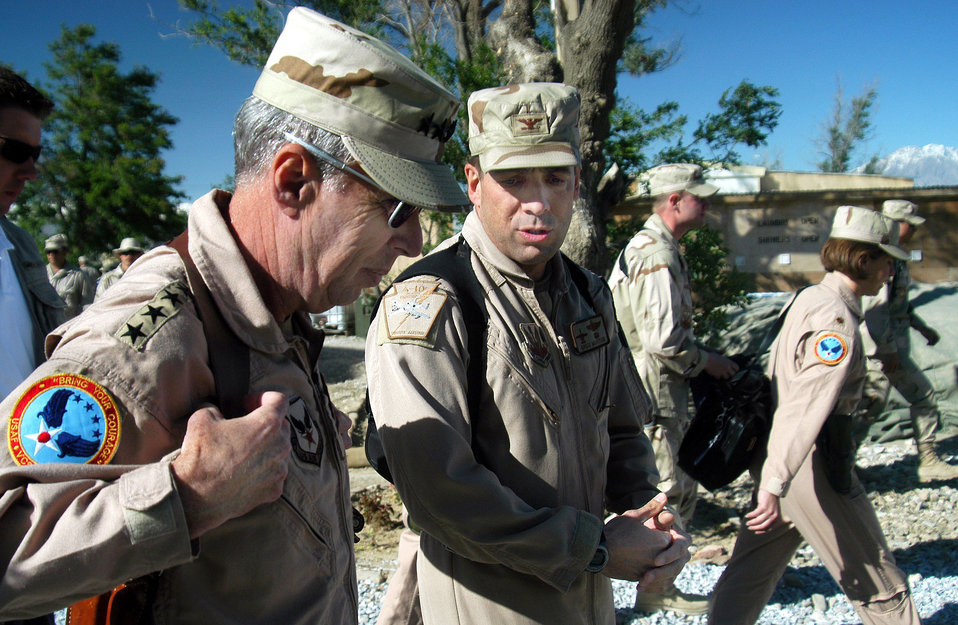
Bagram visit

OPERATION ENDURING FREEDOM (AFPN) -- Col. Greg Marston talks with Gen. Robert H. Foglesong, Air Force vice chief of staff, about quality of life improvements in Air Force Village at Bagram Air Base, Afghanistan on May 4. Foglesong toured the compound, received mission briefings and talked with airmen here about the current state of the expeditionary air and space force. There are about 500 airmen assigned to the base. Marston, who commands the 455th Expeditionary Operations Group here, is deployed from the Pennsylvania Air National Guard's 111th Fighter Wing at Willow Grove Air Reserve Station.